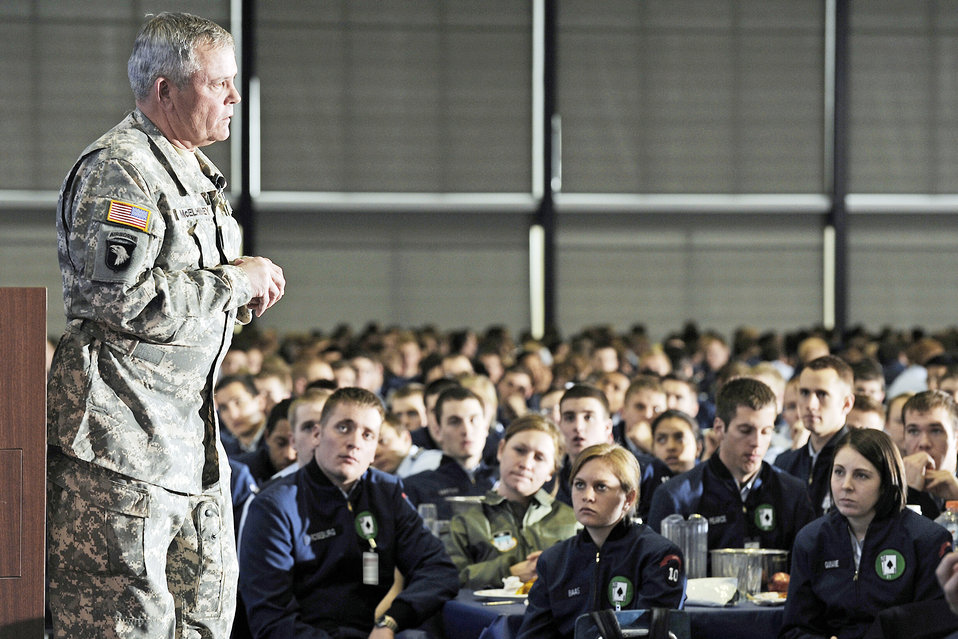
Speakers motivate cadets

Army Chief Warrant Officer 5 Lance McElhiney speaks to the cadet wing in Mitchell Hall during the National Character and Leadership Symposium at the U.S. Air Force Academy Feb. 18, 2010. The annual event is regarded as one of the premier symposiums in the area of ethics and foundations of character. CWO5 McElhiney is a master gunner with the Combat Aviation Brigade at Fort Hood, Texas.